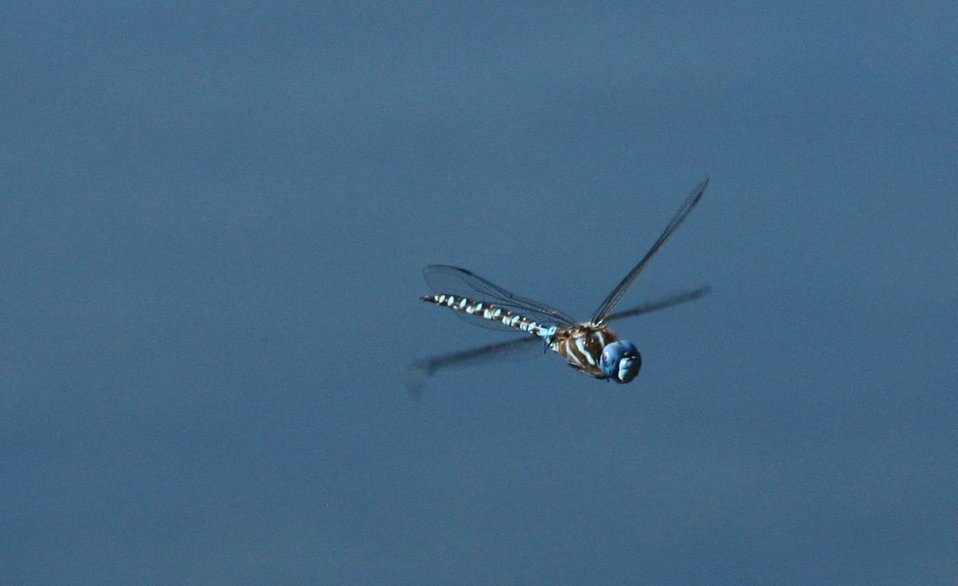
Blue-eyed Darner

Rhionaeshna multicolor flying over Pond 5; this darner will hover for photo opportunities.